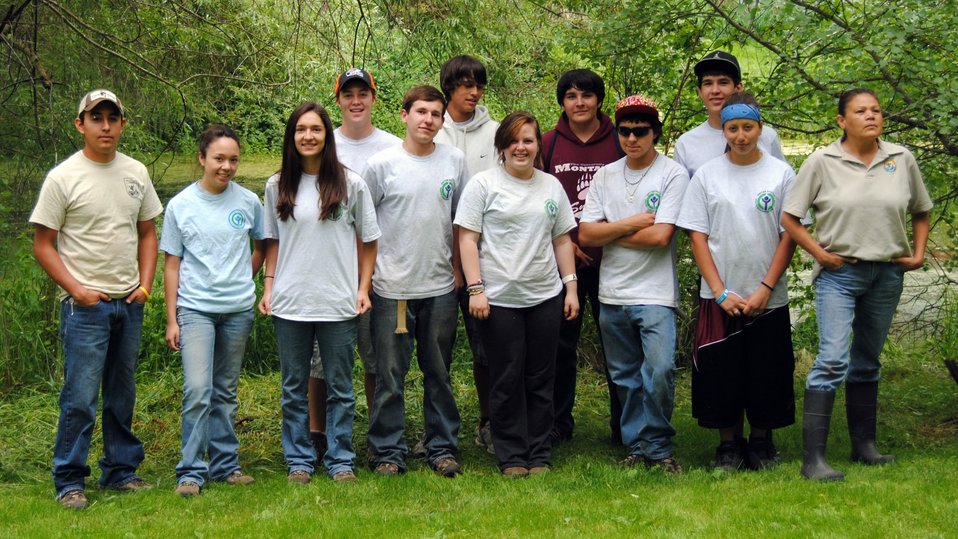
Week 2, Montana Waterfowl Foundation, Ronan, MT

The entire YCC crew at the Foundation. Projects at the Foundation sanctuary included clearing trails and grounds and building and hanging new bird houses.